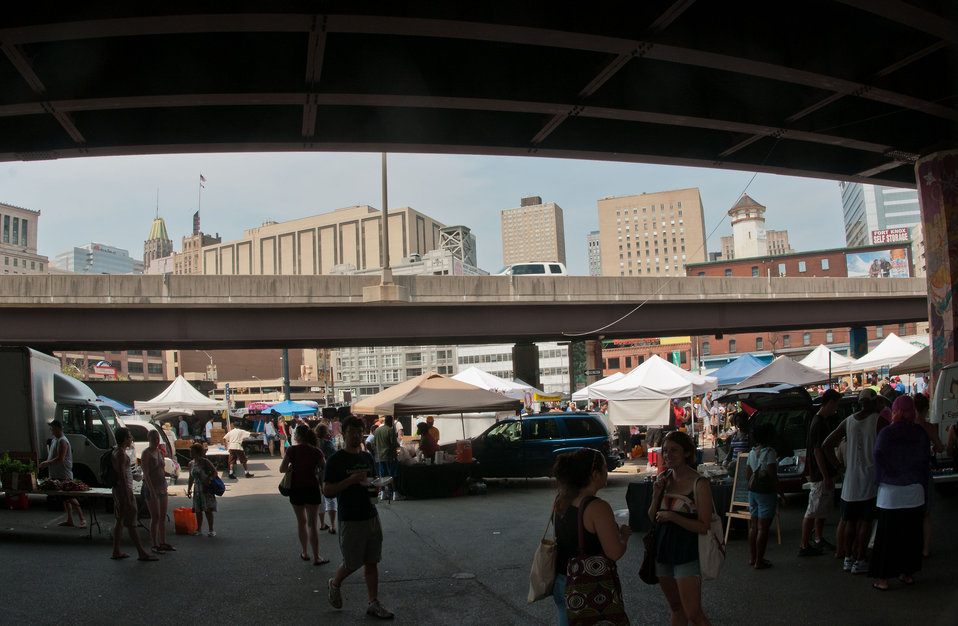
In a parking lot under a highway interchange, Baltimore’s Farmers Market and Bazaar has a busy day despite a heat index over 100 degrees in Baltimore, MD on Sunday, July 8, 2012. . Many of the vendors now accept Baltimore’s Farmers Market and Bazaar tokens thanks to the new wireless connected electronic card reader that accepts the U.S. Department of Agriculture’s (USDA) Food Nutrition Service’s (FNS) Supplemental Nutrition Assistance Program (SNAP) Electronic Benefits Transfer (EBT) cards, Baltimore Bucks, and debit cards.